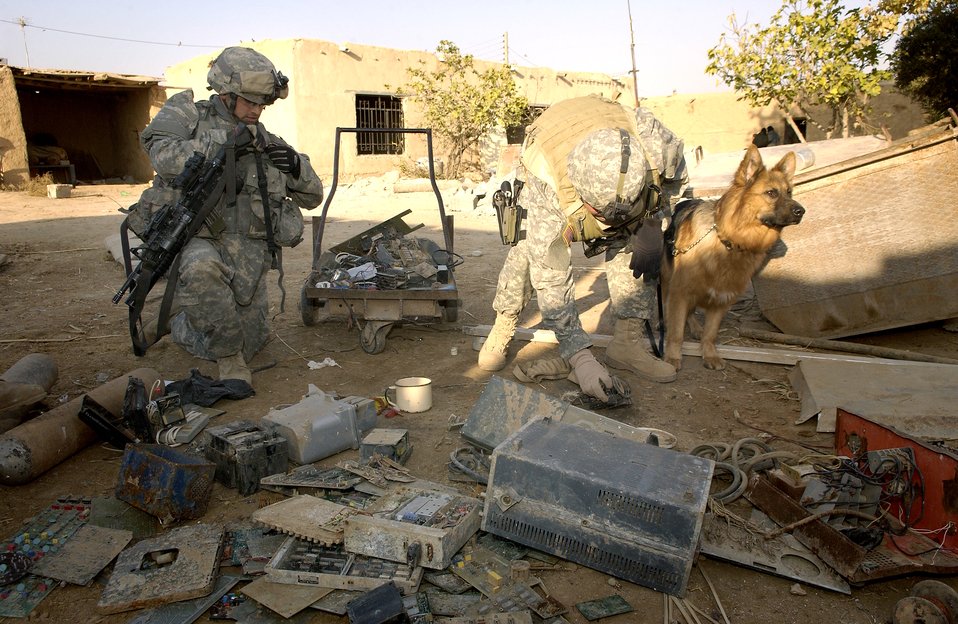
Sniffing out trouble

Army Pfc. Samuel Medrano and Air Force Staff Sgt. Russell McLaughlin load up materials for making improvised explosive devices found Dec. 8 in the village of Tall Qabb, Kirkuk Province. Private Medrano is from Alpha Company, 2nd Battalion, 35th Infantry Regiment, 25th Infantry Division, and Sergeant McLauglin is a K-9 dog handler attached to the 25th Infantry Division.